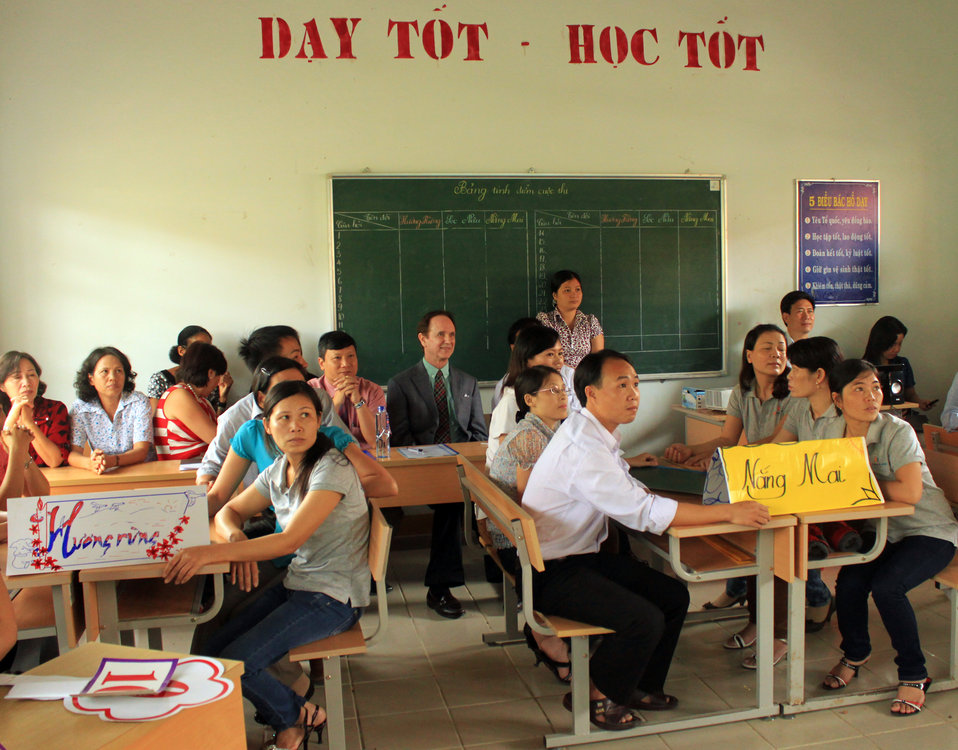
USAID Mission Director Francis Donovan joins local teachers as they practice what they learned from USAID-funded intensive training courses